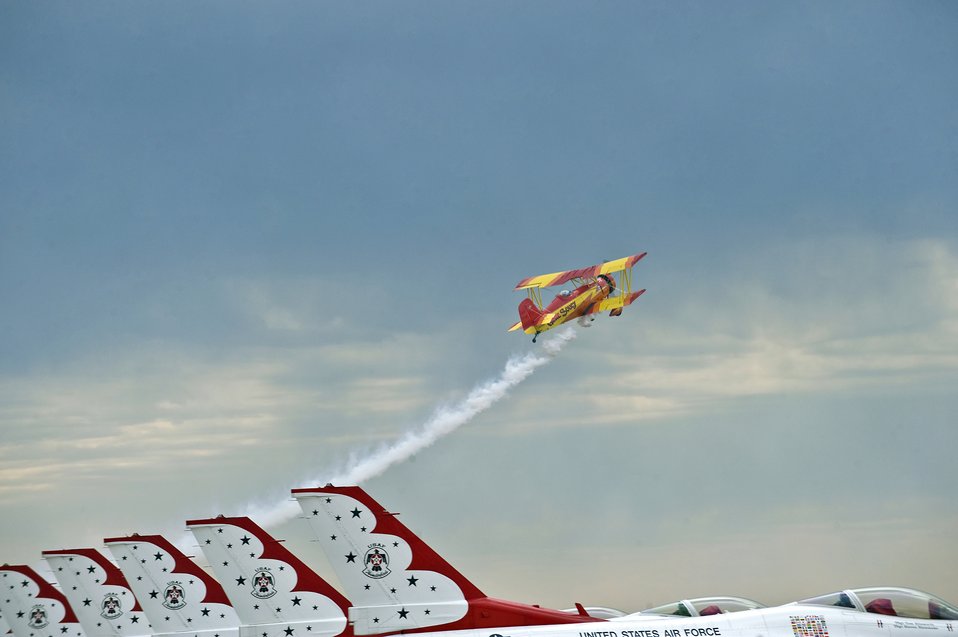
Up, up and away!

Aerobatic pilot Gene Soucy takes off over the Air Force Thunderbirds Sept. 12, 2009, at the California Capital Air Show which was the ending event of Air Force Week Sacramento. Air Force Week Sacramento is an event using various activities and exhibitions to educate the community about the Air Force's capabilities and missions.